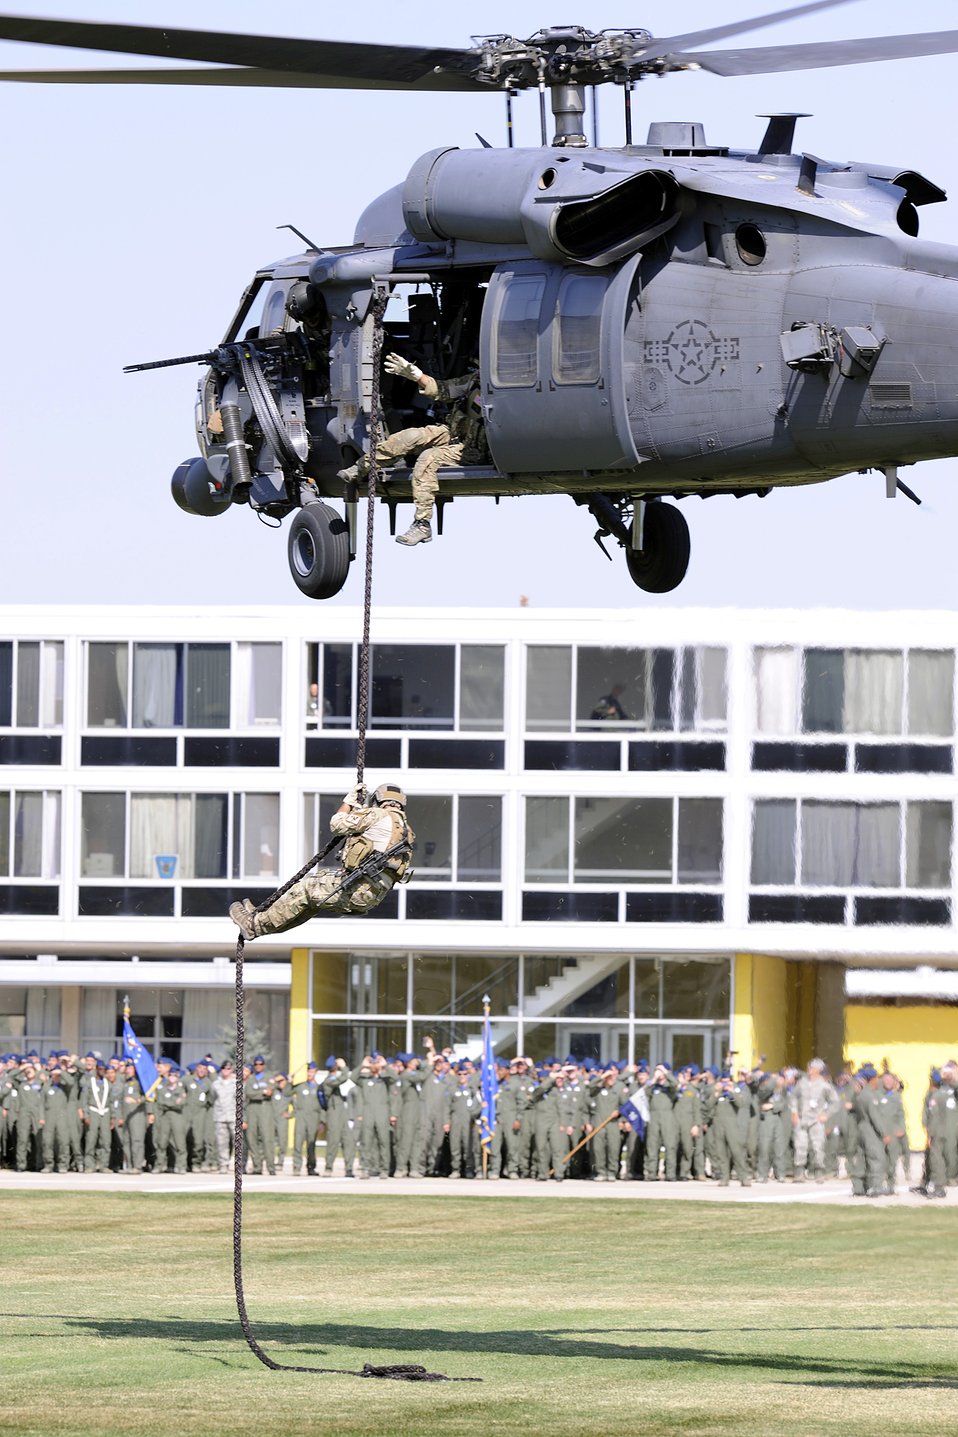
Search and rescue demonstration

An HH-60 Pave Hawk helicopter crew participates in a combat search and rescue demonstration Oct. 1, 2010, at the U.S. Air Force Academy in Colorado Springs, Colo. The HH-60 and its crew are assigned to Davis Monthan Air Force Base, Ariz.